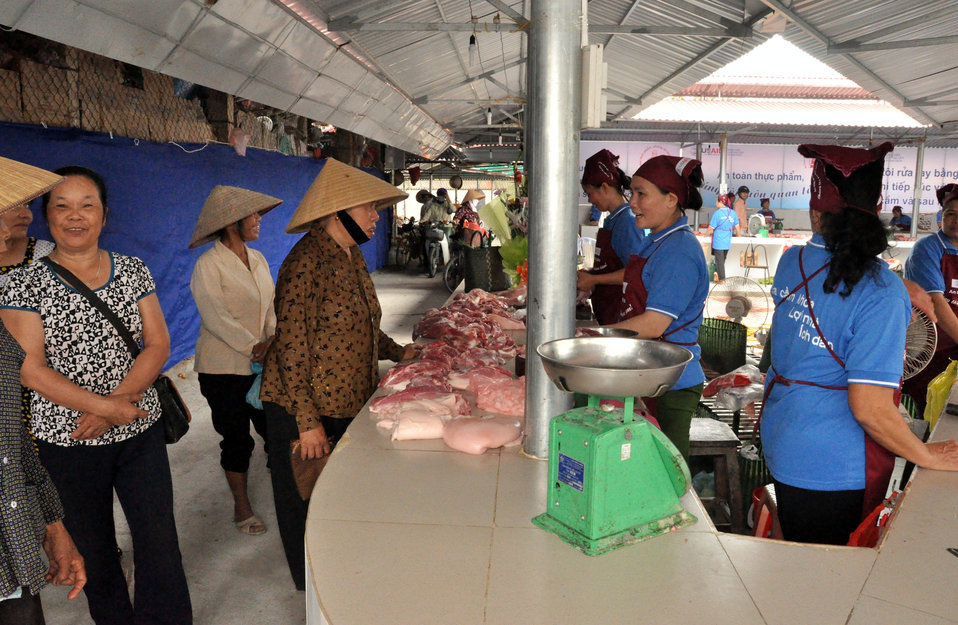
Handover Ceremony Hoa Mac Market Ha Nam

October 26, 2012